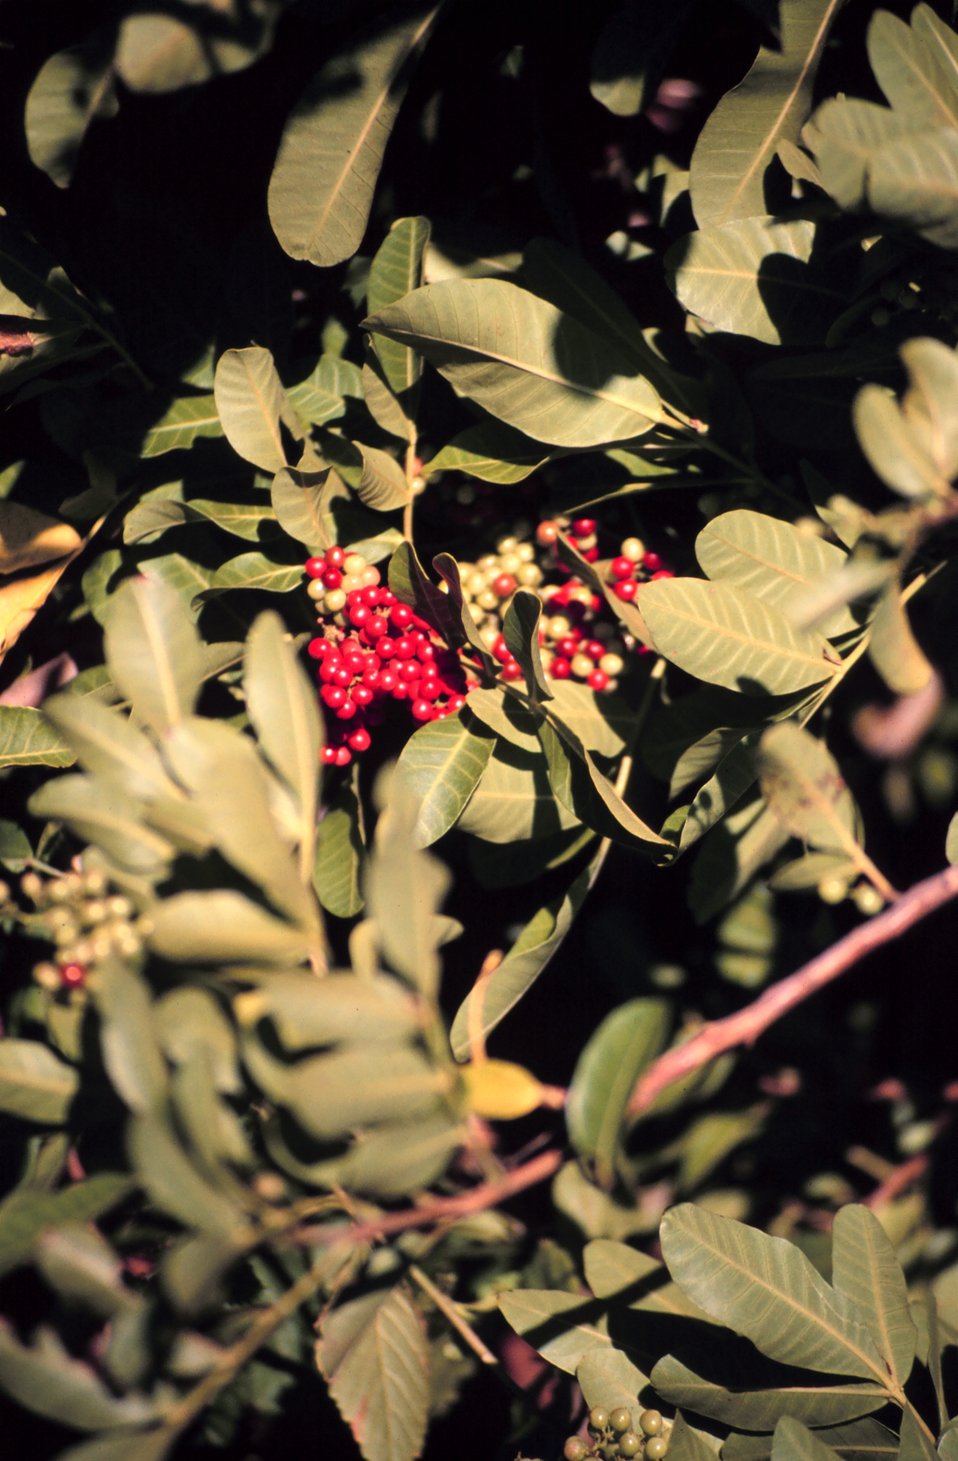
Brazilian Pepper bushes are an ornamental from Brazil that looks like Holly. They produce red berries that birds eat. The birds carry their seeds spreading the plant throughout mangrove habitat where the Pepper bush outcompetes the mangroves. The red berries are beautiful but toxic; direct contact with them causes a poison ivy-like rash.